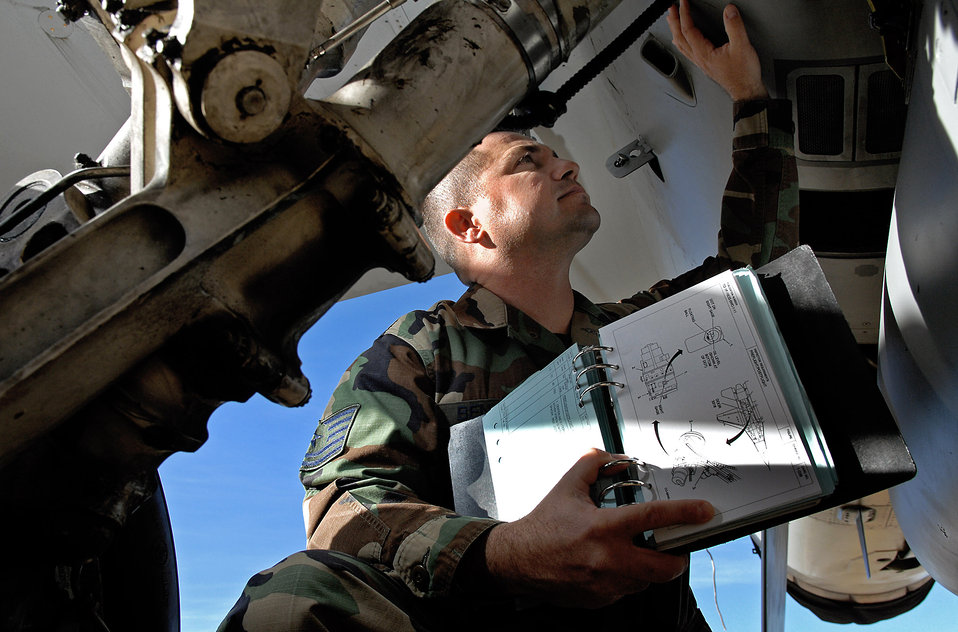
Hill fighter squadron excels with Total Force Integration mission

Tech. Sgt. Matt Bennato inspects an F-16 Fighting Falcon's engine generators and brake right landing gear Oct. 10 prior to a flight at Hill Air Force Base, Utah. Sergeant Bennato is an Air Reserve Technician crew chief.